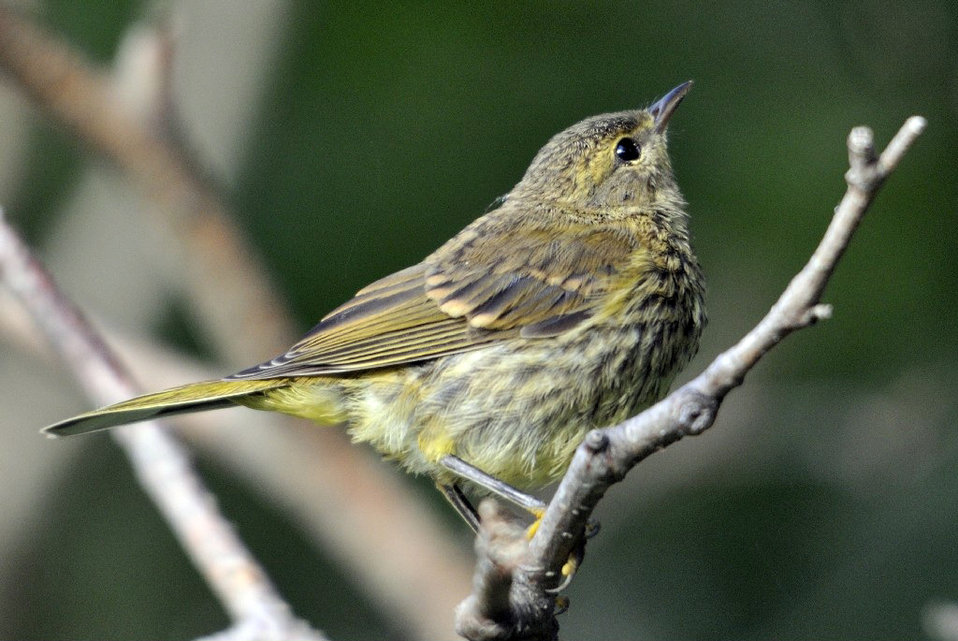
Photo of the Week - Yellow-rumped warbler (ME)

Photo of the Week - 11/21/11

Yellow-rumped warbler photographed at Kennebago Lake, ME.